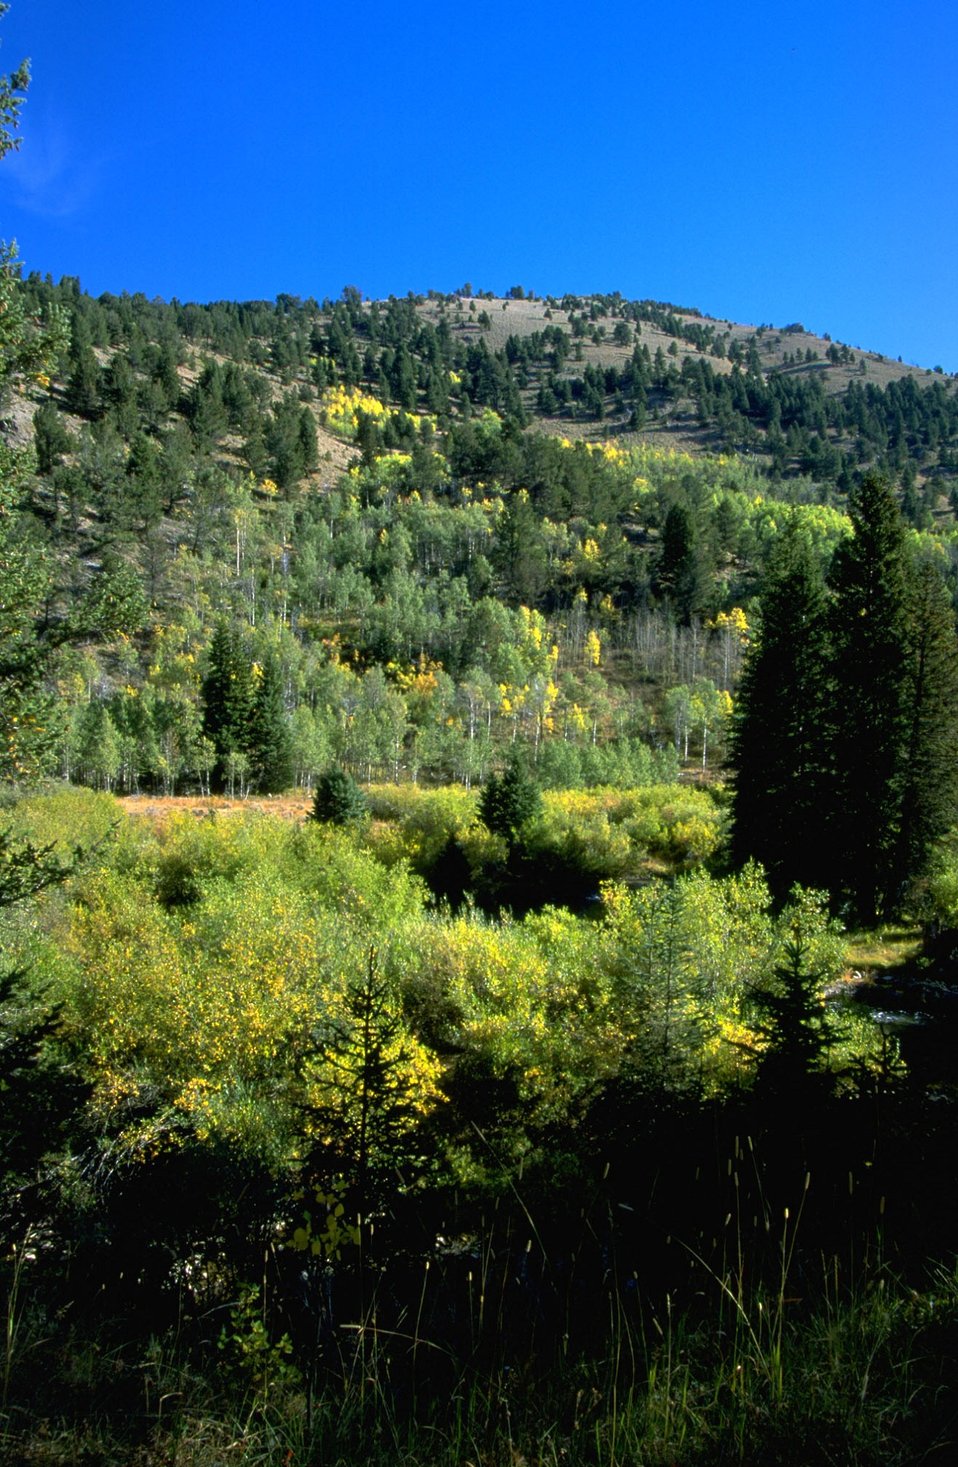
Aspen and Willows along valley floor